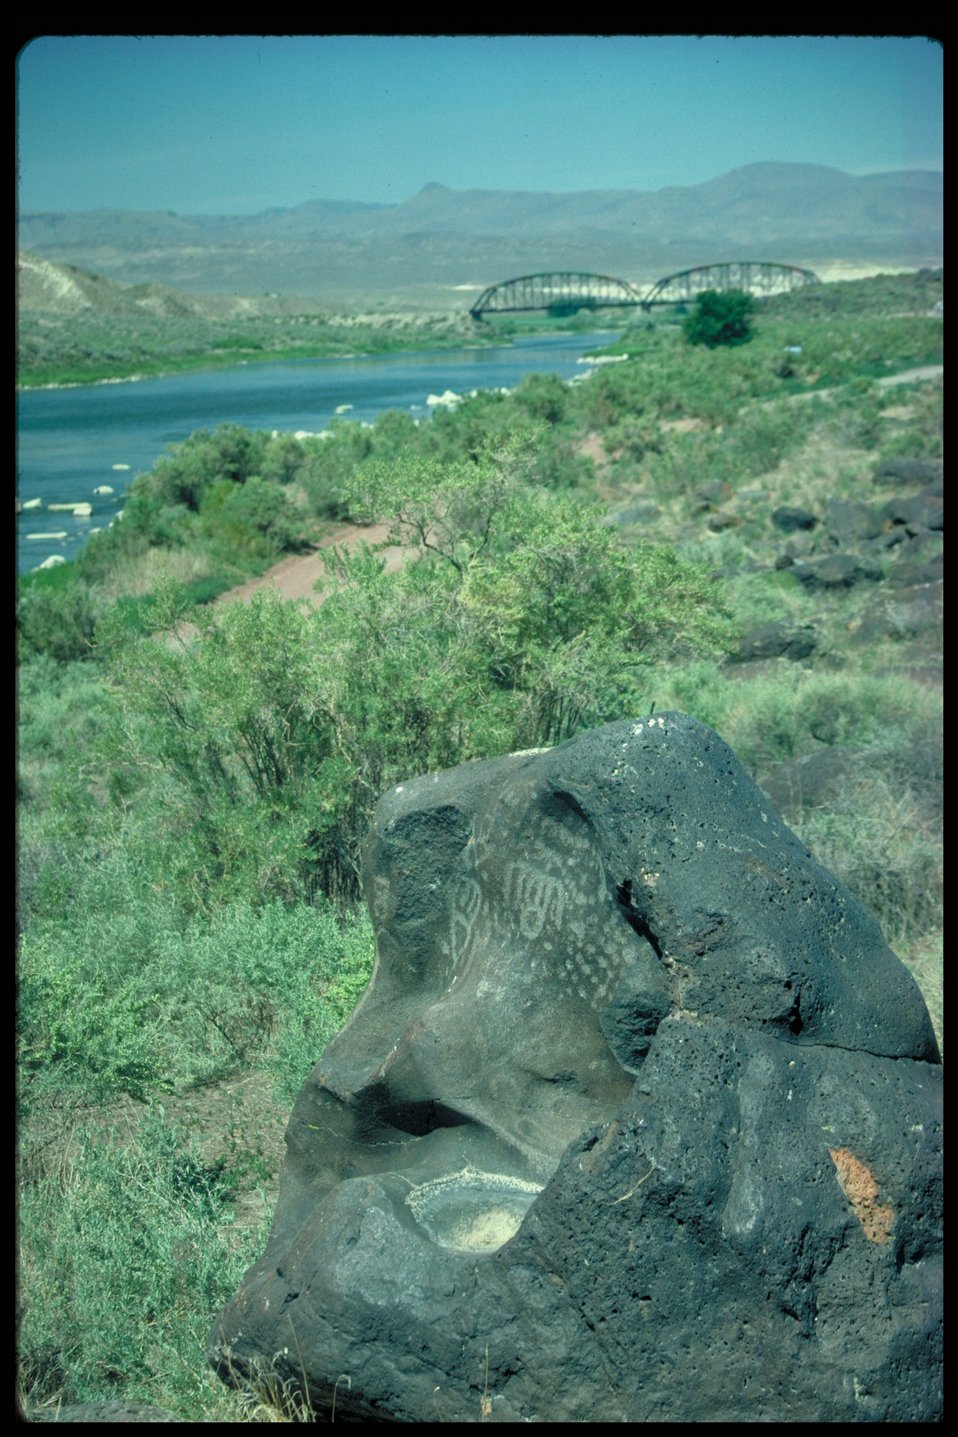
Petroglyphs Birds of Prey National Conservation Area BOP Owyhee Field Office LSRD Lower Snake River District